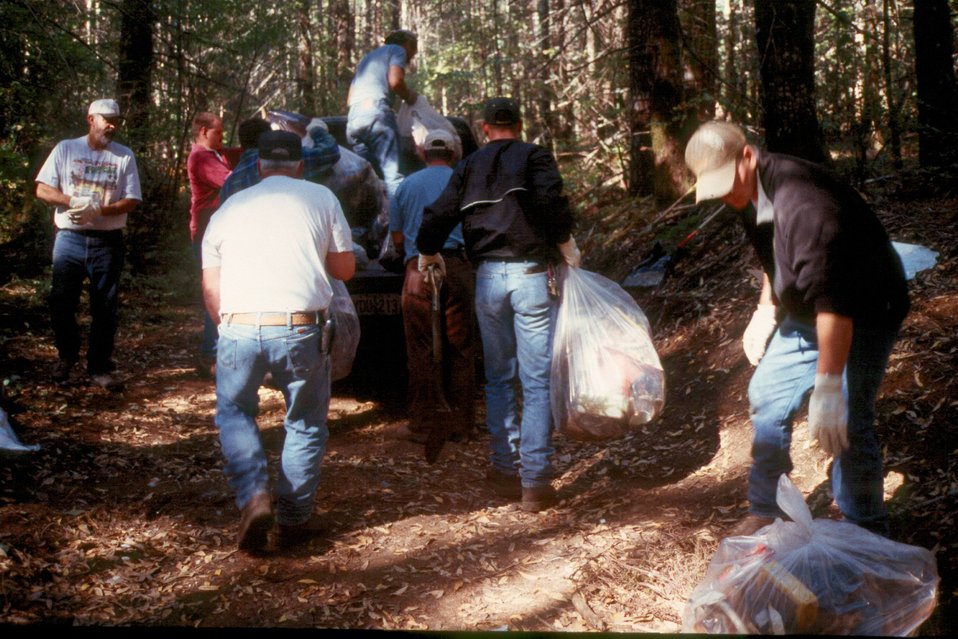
Junction City Jeepers clean up a hidden trash site on BLM lands